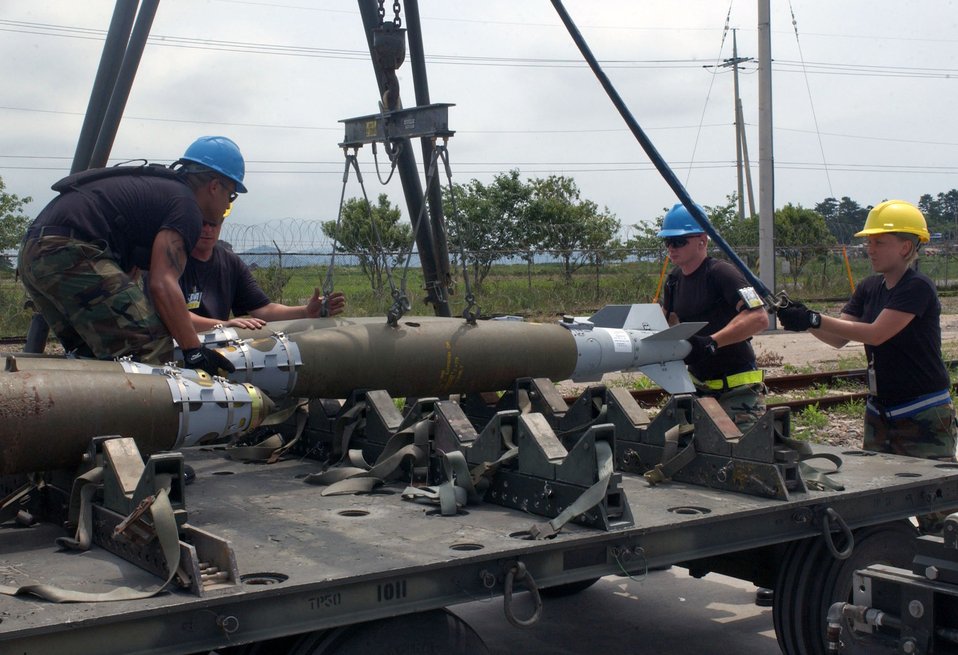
CAPEX underway at Kunsan

Airmen from the 51st Munitions Squadron at Osan Air Base, South Korea, remove bombs from a trailer July 11 during a combat ammunition production exercise being held at Kunsan AB, South Korea. The three-day exercise provides Pacific Air Forces and Air Combat Command units with training in mass munitions assembly in support of aircraft sortie generation.